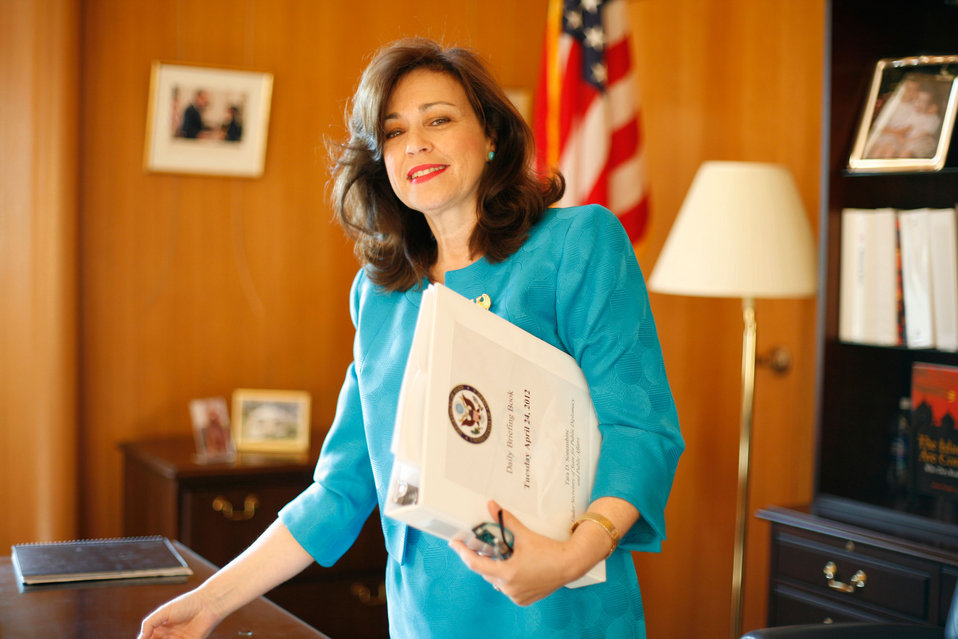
Under Secretary Sonenshine Prepares for her Swearing-In Ceremony

Under Secretary of State for Public Diplomacy and Public Affairs Tara Sonenshine prepares for her swearing-in ceremony with Secretary of State Hillary Rodham Clinton at the U.S. Department of State in Washington, D.C., on April 24, 2012.